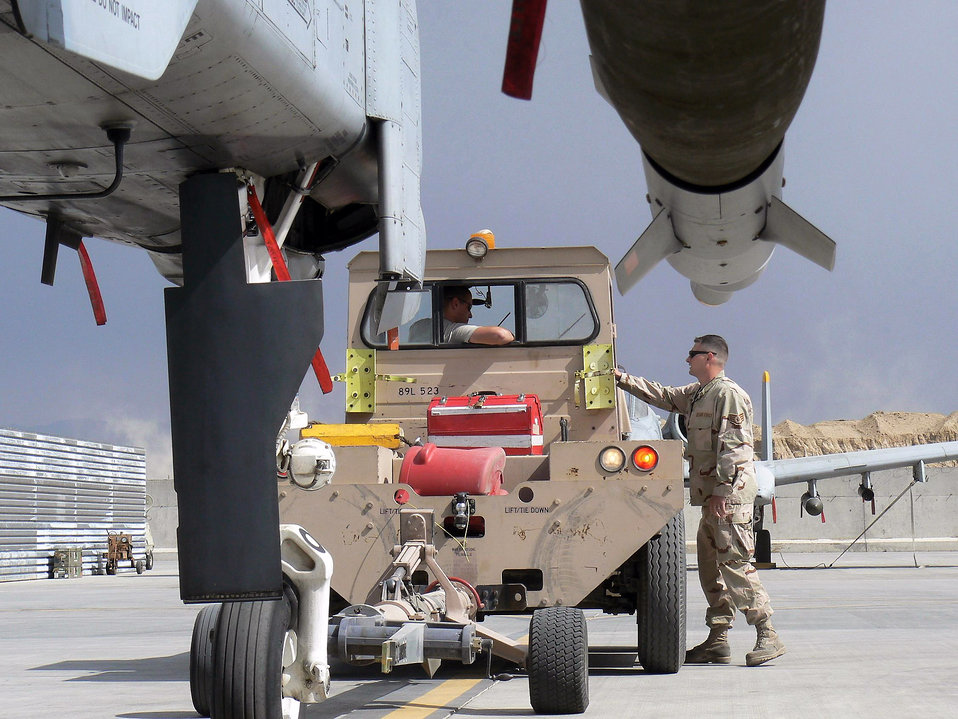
Keeping the A-10 fit to fight

Senior Airman Tristan Bacom tows an A-10 Thunderbolt II at Bagram Air Base, Afghanistan, while Staff Sgt. Damon Ballard supervises the operation. Both crew chiefs are assigned to the 81st Expeditionary Aircraft Maintenance Unit and are deployed from Spangdahlem Air Base, Germany.